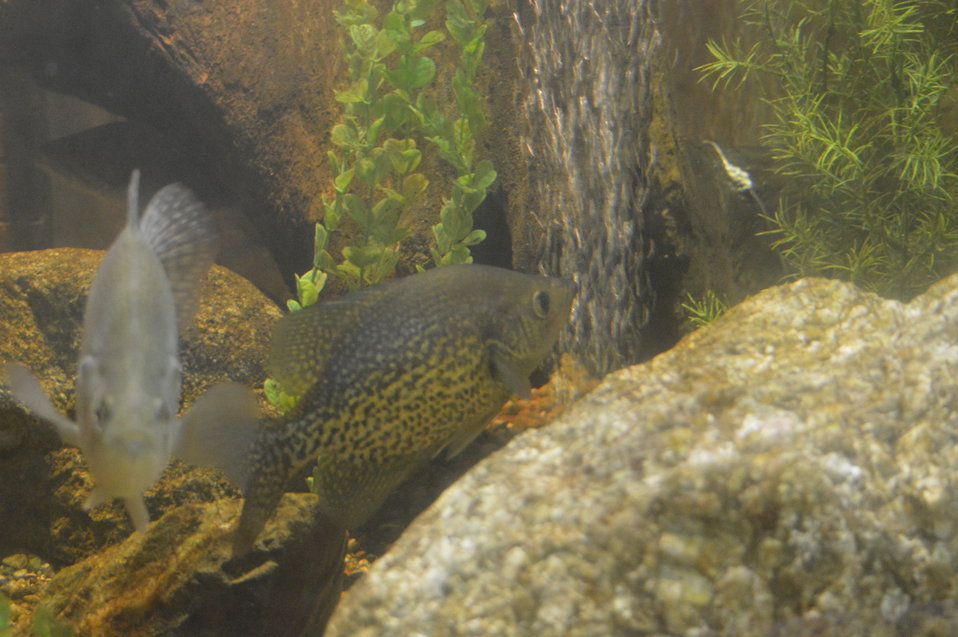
Aquarium fish

Garrison Dam National Fish Hatchery in North Dakota.